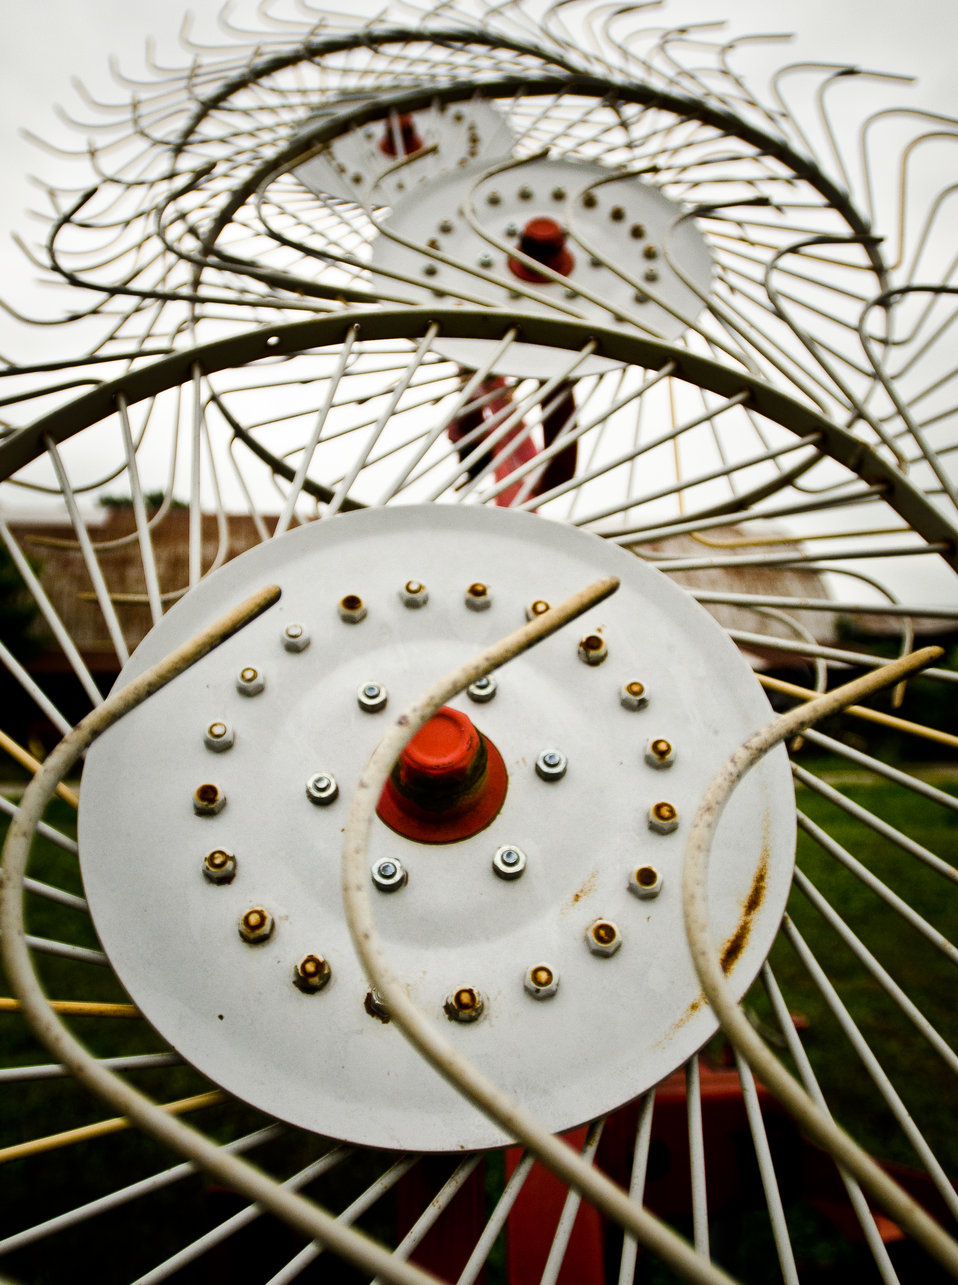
Nick’s Organic Farm is owned by Nick Maravell in Adamstown, MD on Friday, July 12, 2013. The farm produces Black Angus beef, chicken, turkey, eggs, hay, soybeans, corn, alfalfa, orchard grass, rye; and other crops. The cattle are 100% grass-fed receiving certified organic pasture, certified organic hay (in winter), water and mineral salts mixed with sea kelp. The cattle are not fed hormones, antibiotics or animal products. Poultry feed from grain is ground from organic grain. The poultry also graze on organic pastures. The farm has conducted on-farm research with federal, state and non-profit agencies to refine organic practices. An organization such as the U.S. Department of Agriculture (USDA) Agricultural Research Service (ARS) center in Beltsville has been able to conduct research to improve organic crops and to breed and manage the cattle so that they have. George Kloph is the farm assistant at this site.